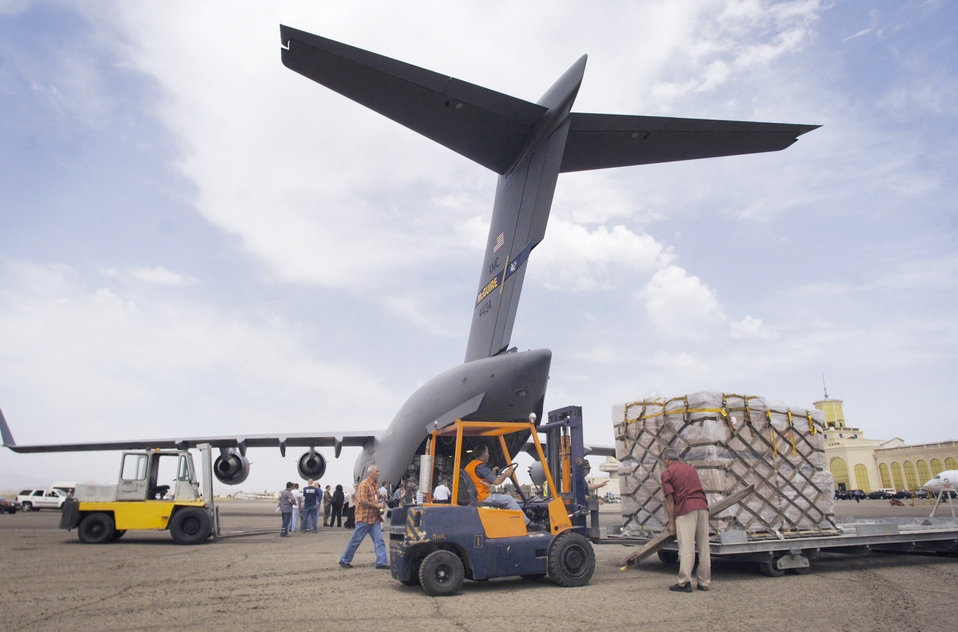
Mobility Airmen poised to support humanitarian operations in American Samoa

Ten Air Mobility Command C-17 Globemaster IIIs, such as the one pictured here, and aircrews across the U.S. have been placed on alert to support relief efforts in American Samoa after a tsunami struck the region Sept. 29, 2009. This alert posture allows the planes and crews to take off within hours of notification to support worldwide airlift requirements, including humanitarian relief operations.